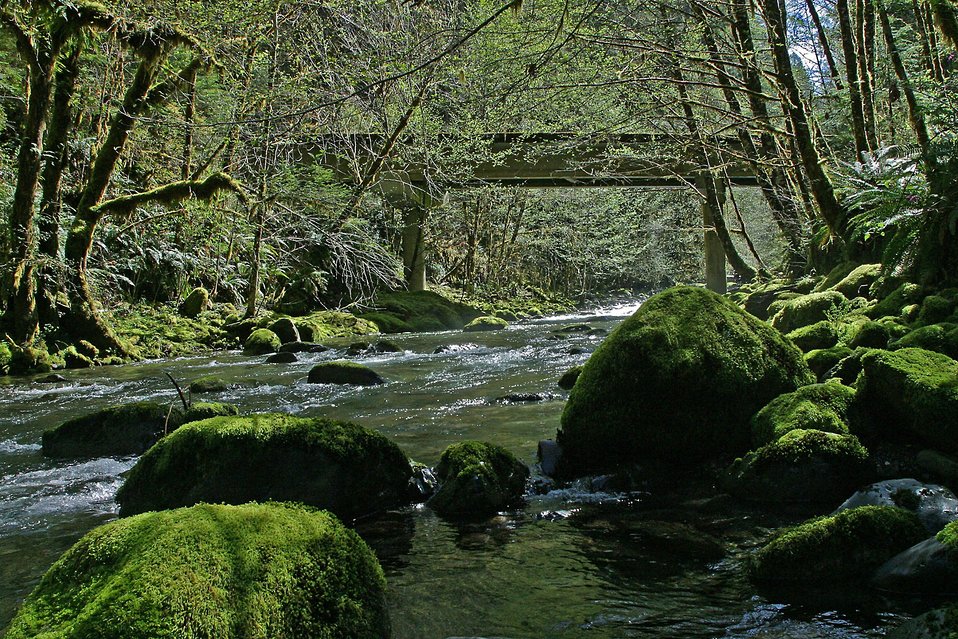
Little N. Fork Santiam River flows under the Lyons Bridge where theives removed aluminum gaurdrailing.